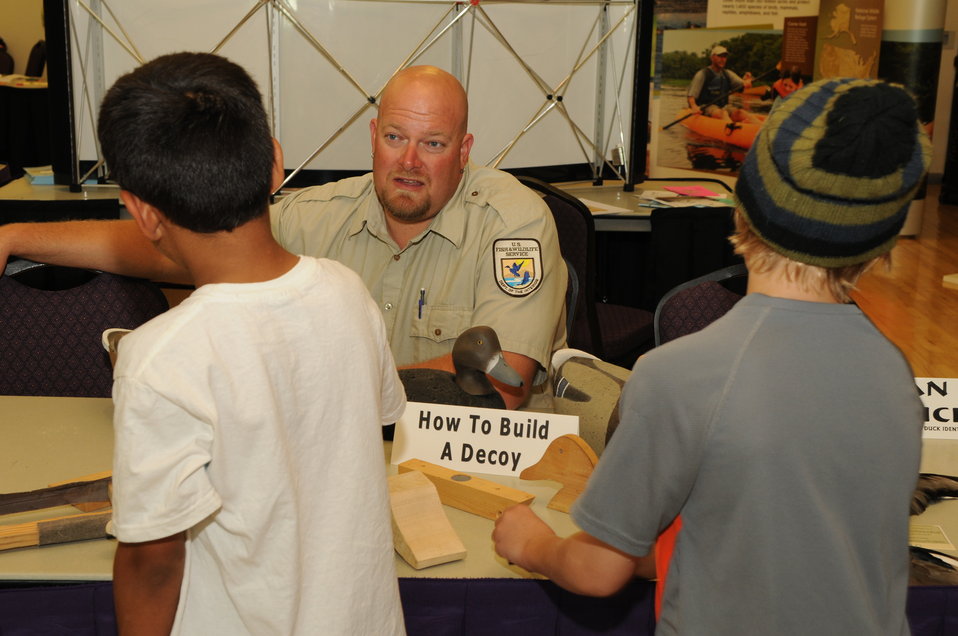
Youth Outreach

The U.S. Fish & Wildlife Service sponsored the 2012 Federal Duck Stamp Art Contest September 28 and 29 in Ogden, Utah, at Weber State University. A panel of five judges was responsible for choosing the art work used to design the 2013-2014 Migratory Bird Hunting and Conservation Stamp.